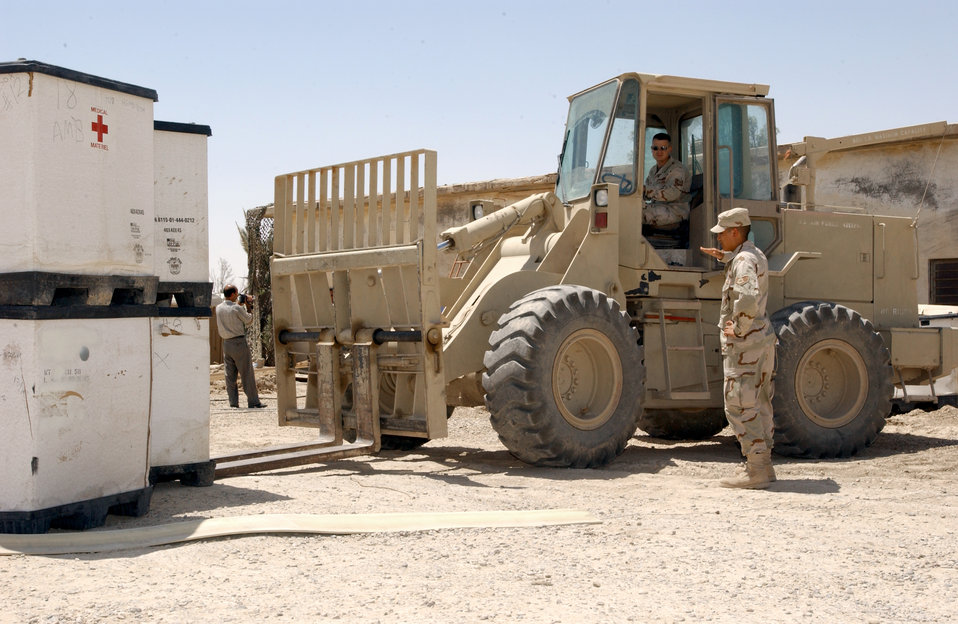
A little bit higher now

TALLIL AIR BASE, Iraq -- Staff Sgt. Melvin Morena guides Tech. Sgt. Jayme Jackson as he loads cases of medical supplies bound for nearby Nasiriyah. The Airmen are assigned to the 407th Expeditionary Medical Group. Officials transferred $141,000 worth of medical supplies and equipment to a local hospital to help rebuild its medical capabilities.